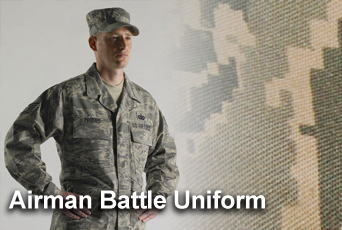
Uniform officials warn Airmen about knockoff ABUs

Air Force officials are cautioning Airmen about purchasing the Airman Battle Uniform that may not meet the service's stringent specifications from unauthorized commercial manufacturers. Officials said the ABU provided by its official source, Defense Supply Center Philadelphia, should be available for purchase at Army and Air Force Exchanges Service locations in October.